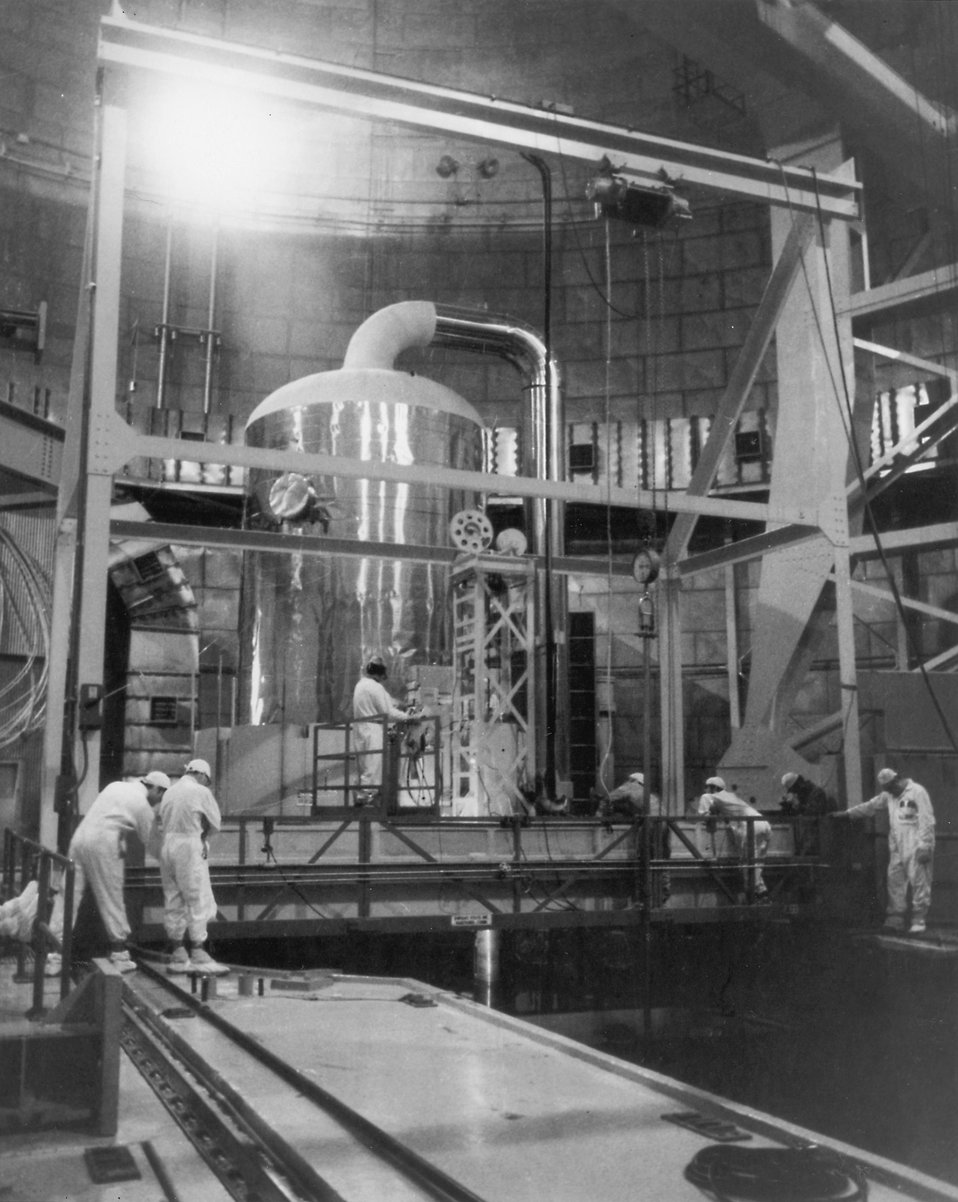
Hartsville, SC... Interior of the H.B. Robinson Steam Electric Plant Unit 2. Circa 1973.